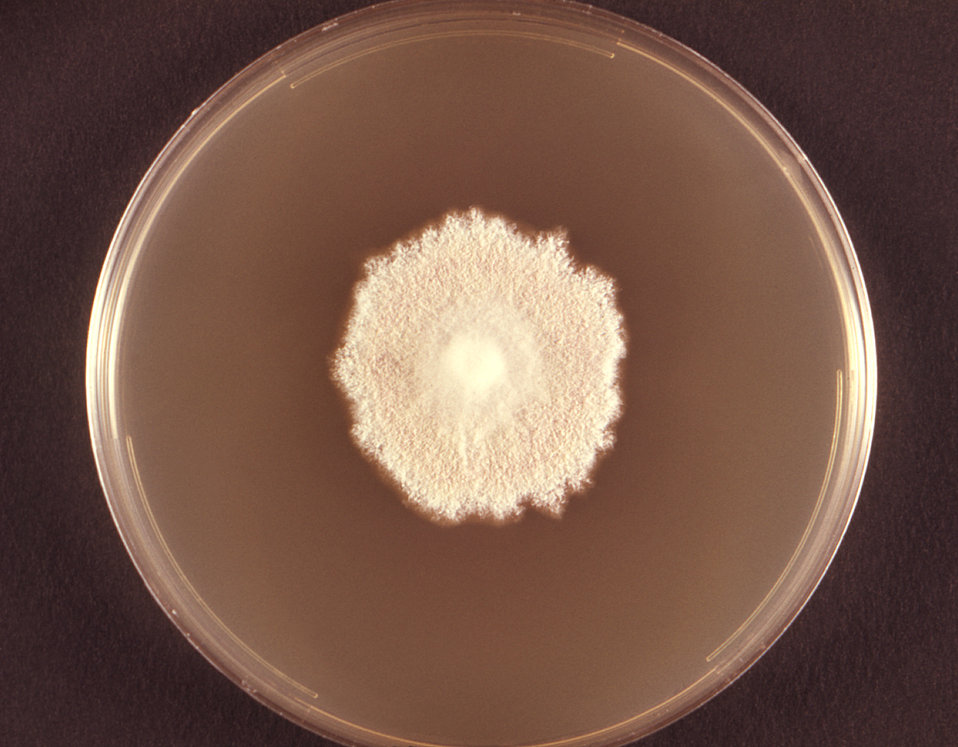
Photographed from the front, this image depicted a Petri dish containing cereal agar, upon which a Microsporum persicolor fungal colony had been cultured. As was the case here, the colonies can be white, or depending upon the Microsporum sp., may run the gamut, sporting a yellow, beige or cinnamon color, and display a flat, or glabrous, woolly or powdery texture. Taxonomically, M. persicolor is a member of the phylum Ascomycota. See PHIL 10905 for a reverse view of this colony, i.e., viewed from behind.